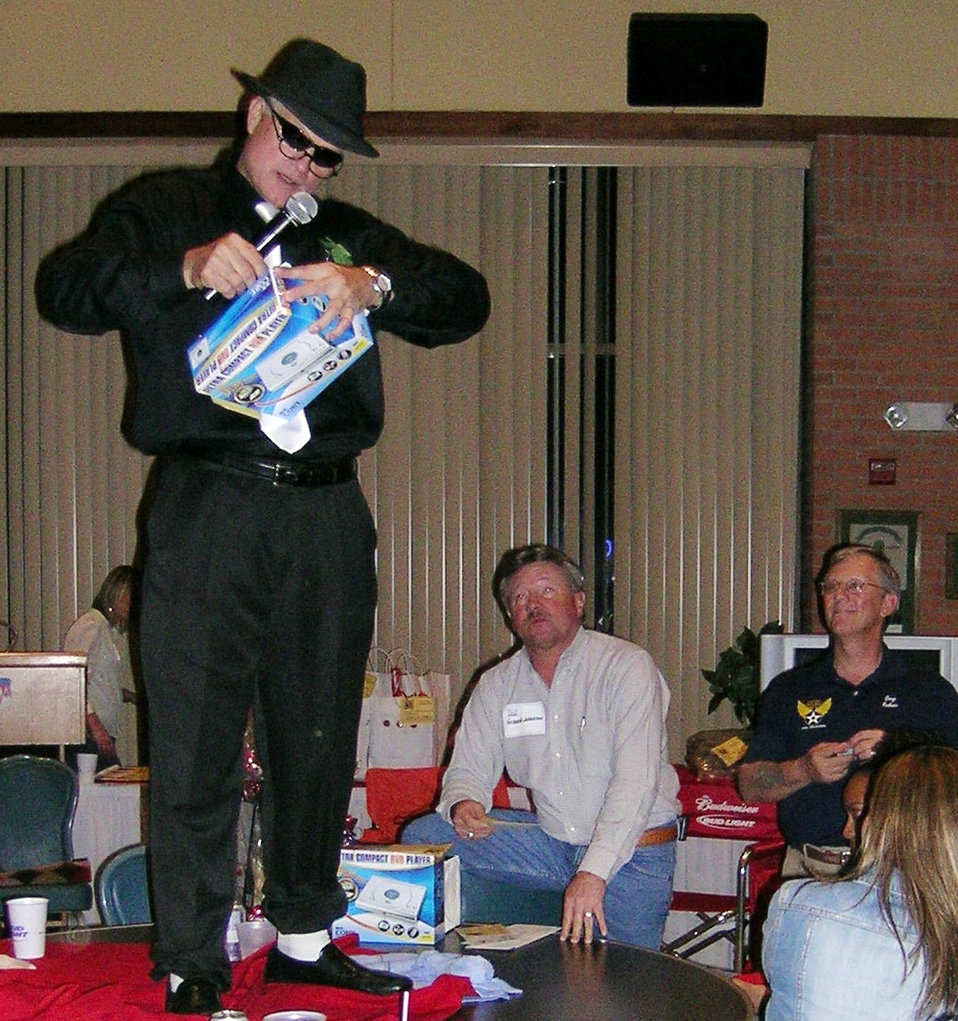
Streamlining maintenance operations

The Warner Robins Air Logistics Center at Robins Air Force Base, Ga., received the 2006 Franz Edelman Award for Achievement in Operations Research on Monday, May 1, 2006, for its use of operations research to streamline maintenance procedures for the C-5 Galaxy. Using innovative management processes, the time required to repair and overhaul the C-5 was reduced 33 percent.